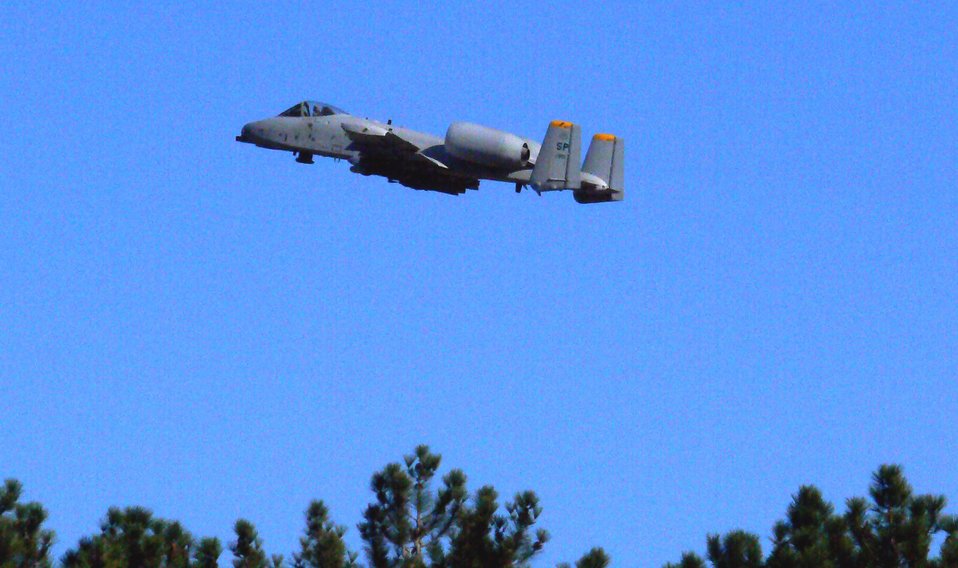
Spangdahlem Airmen deploy to Portugal for training

An A-10 Thunderbolt II from Spangdahlem Air Base, Germany, flies during a training mission Jan. 24 at Monte Real Air Base, Portugal. The 81st Fighter Squadron trained in Portugal for the month of January.